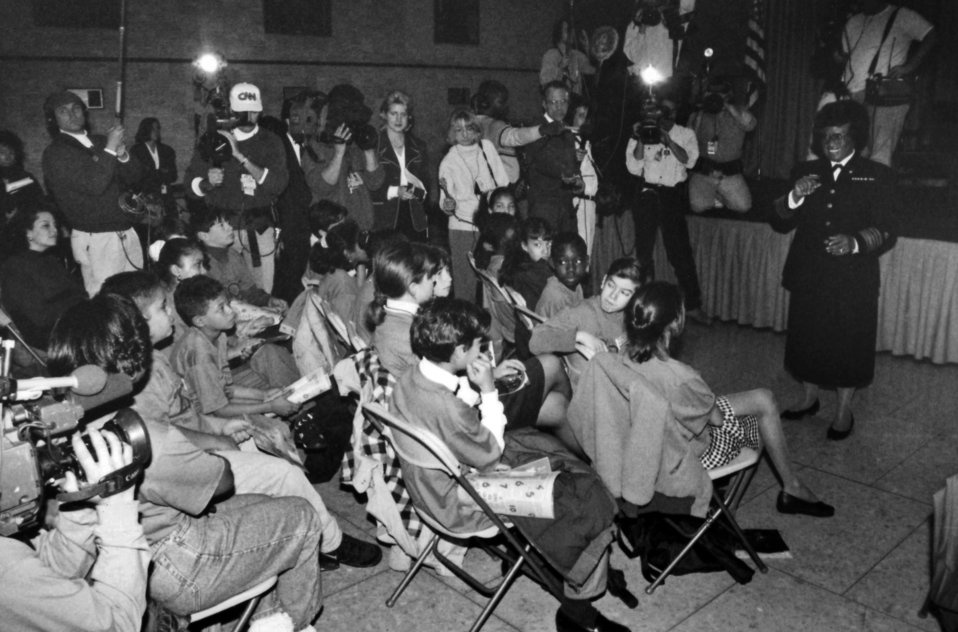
With reporters and television cameras on hand, this 1993 photograph showed the Surgeon General, Dr. Joycelyn Elders (1993 - 1994) as she was addressing school children as to the dangers of smoking.